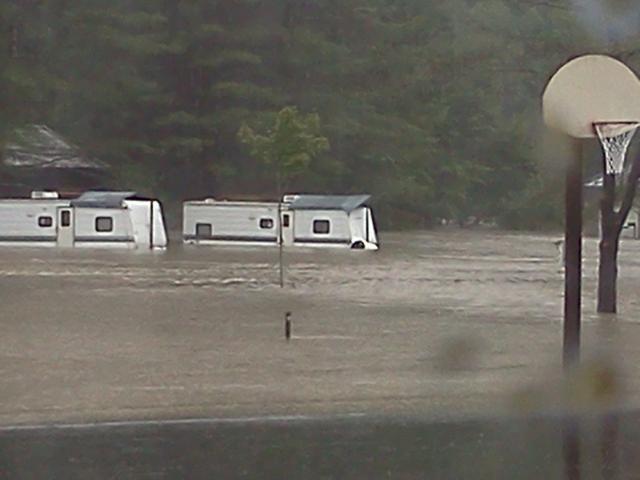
Flooding on White River National Fish Hatchery during Irene

Intern trailers and Hatchery grounds are flooded by rising water from the White River during Hurricane Irene.